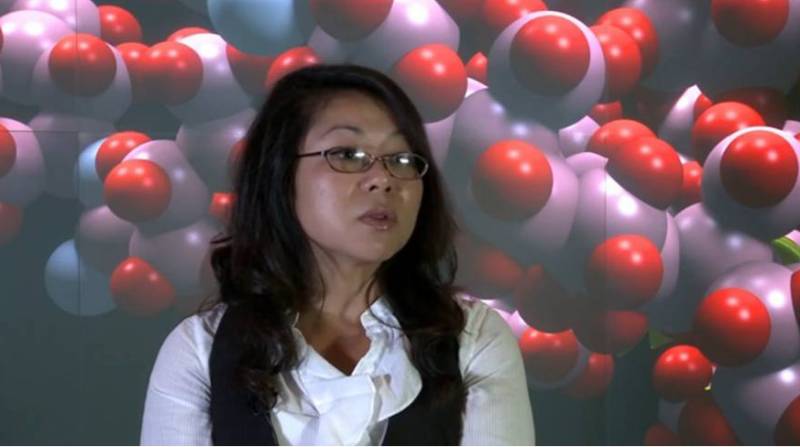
Hai Ah Nam

Dr. Hai Ah Nam is a computational nuclear physicist working at the Oak Ridge Leadership Computing Facility at Oak Ridge National Laboratory (ORNL) since 2008. Hai Ah’s research focuses on using cutting-edge high performance computing systems like Titan, the world’s fastest supercomputer, to solve large-scale problems in theoretical low-energy nuclear physics. Currently, she is a co-PI on the 6th largest Innovative and Novel Computational Impact on Theory and Experiment (INCITE) allocation award for computing time on the Nuclear Structure and Reactions project. Hai Ah is also a co-PI and serves on the NUclear Computational Low-Energy Initiative (NUCLEI) Advisory Council, a Scientific Discovery through Advanced Computing (SciDAC) application partnership focused on integrating computer science, applied mathematics and physics to use high-performance computing to explore the nuclear landscape. She received her Ph.D. in Computational Science jointly from San Diego State University and Claremont Graduate University in 2010. She received her M.S. in Physics from Carnegie Mellon University in 1999 and B.A. in Physics from Scripps College in 1997.

Read her full story at energy.gov/diversity/articles/women-energy-hai-ah-nam